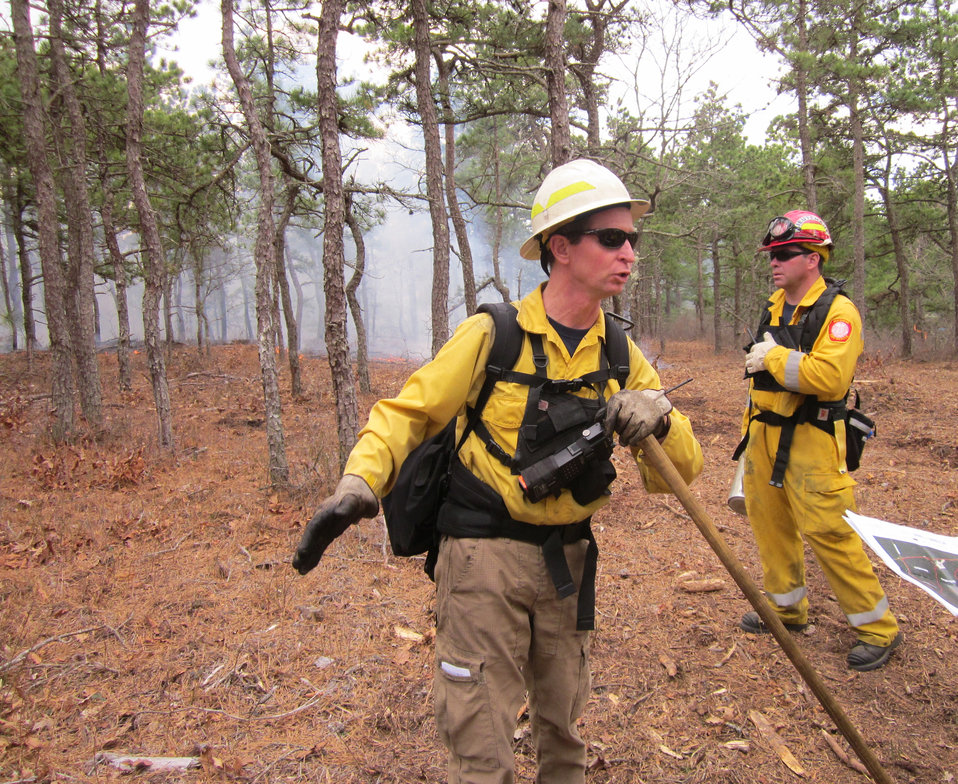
Fire Management Officer in Action

Mashpee, Massachusetts, April 5, 2012. Dave Walker, New England Zone Fire Management Officer for the U.S. Fish and Wildlife Service instructs his division at a controlled burn at the Town of Mashpee Holland Hill Barrens area of Mashpee National Wildlife Refuge. Lieutenant Rick Thayer of the Town of Mashpee Fire Department watches the burn. The burn reduced fire risk to neighboring homes and improved habitat for the New England cottontail. It was conducted by the Town of Mashpee, U.S. Fish and Wildlife Service, State of Massachusetts Department of Conservation and Recreation, and Northeast Forest and Fire Management.